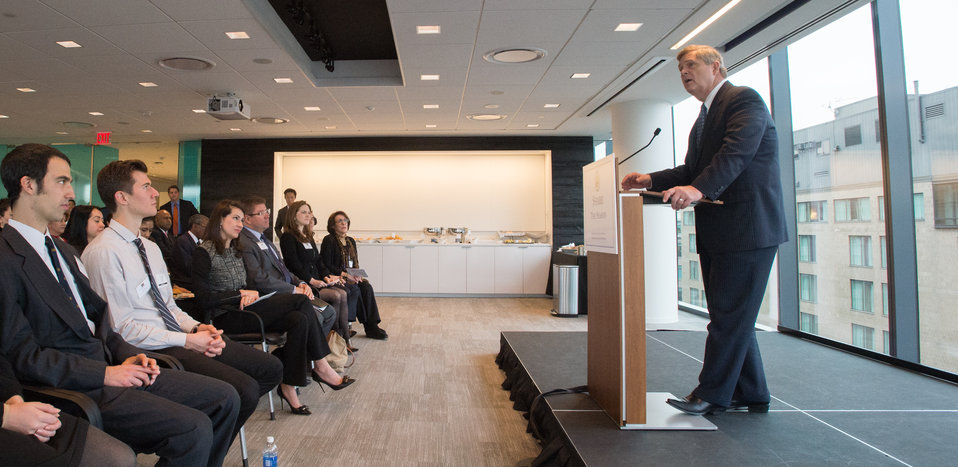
Agriculture Secretary Tom Vilsack speaks to embassy representatives at a Share the Season event organized by the U.S. Department of State Office of the Chief of Protocol Diplomatic Partnership Division at the Business Roundtable (BRT) in Washington, D.C. on Thursday, Nov. 21, 2013. BRT is a non-profit association of chief executive officers of leading U.S. companies that encourages embassies and diplomats to be active in local community service projects.